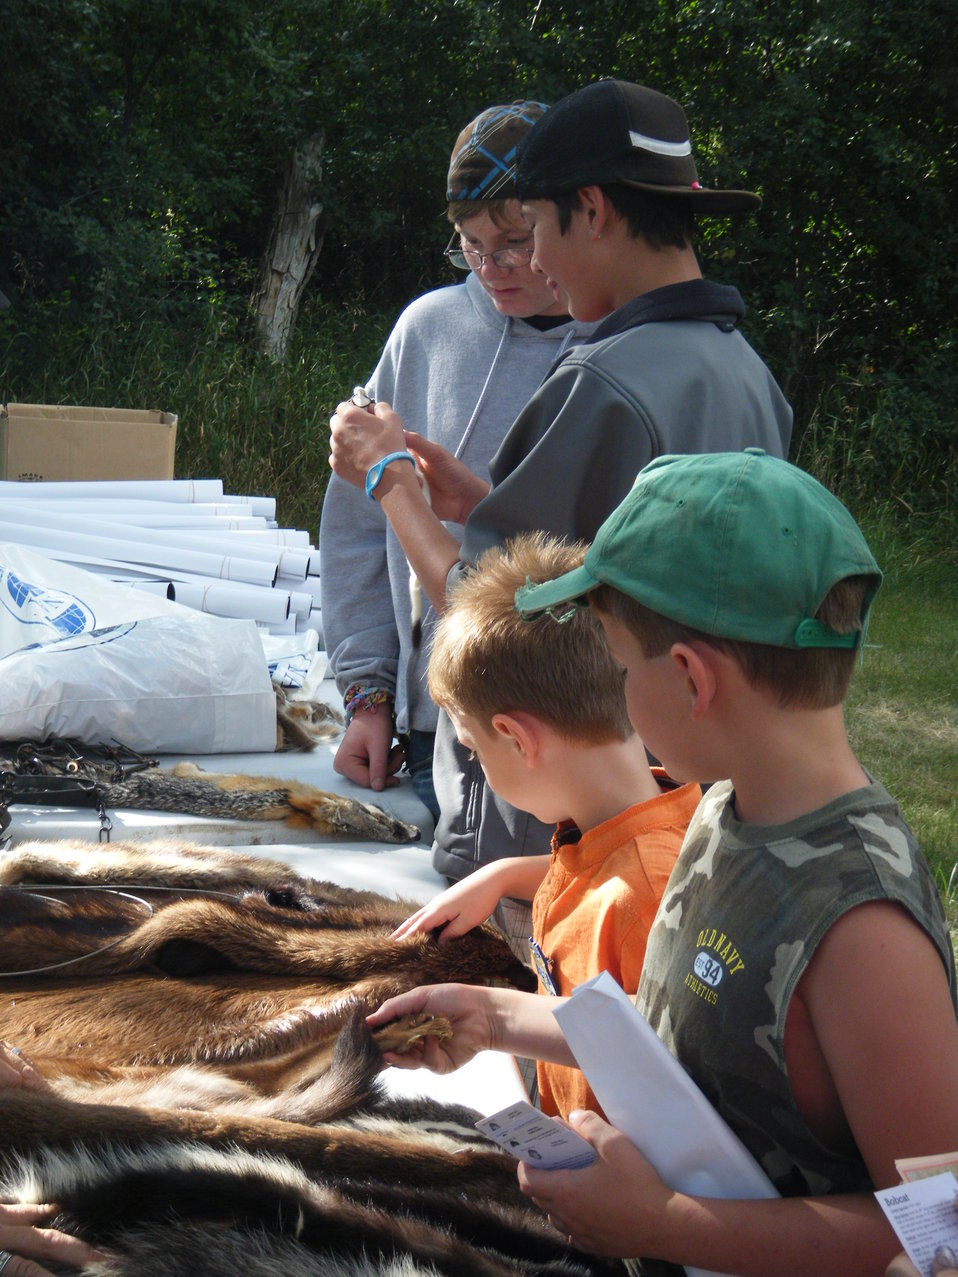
2011 Greenwing Day - Trapping session

Des Lacs National Wildlife Refuge, Tasker's Coulee